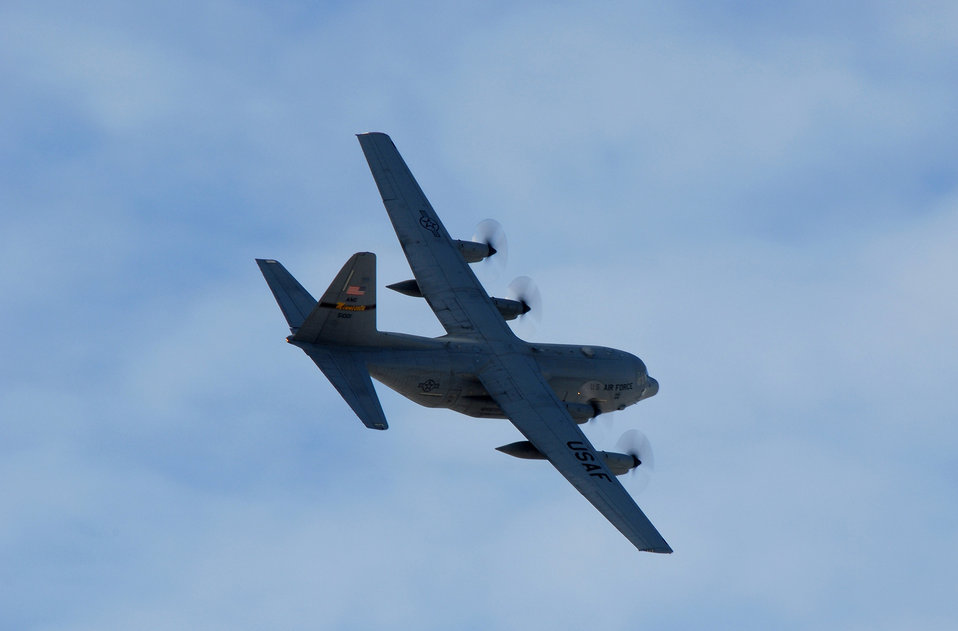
Welcome home coach

A 133rd Airlift Wing Minnesota Air National Guard C-130 Hercules flies over the Minneapolis St. Paul International Airport Feb. 17 after returning from deployment to Afghanistan supporting of Operation Enduring Freedom.